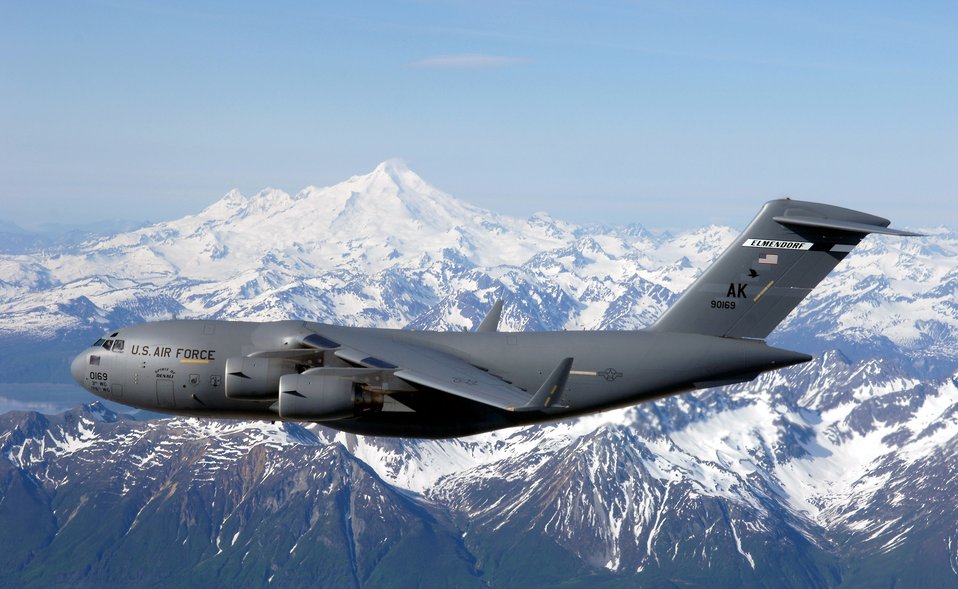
Elmendorf celebrates C-17 arrival

The